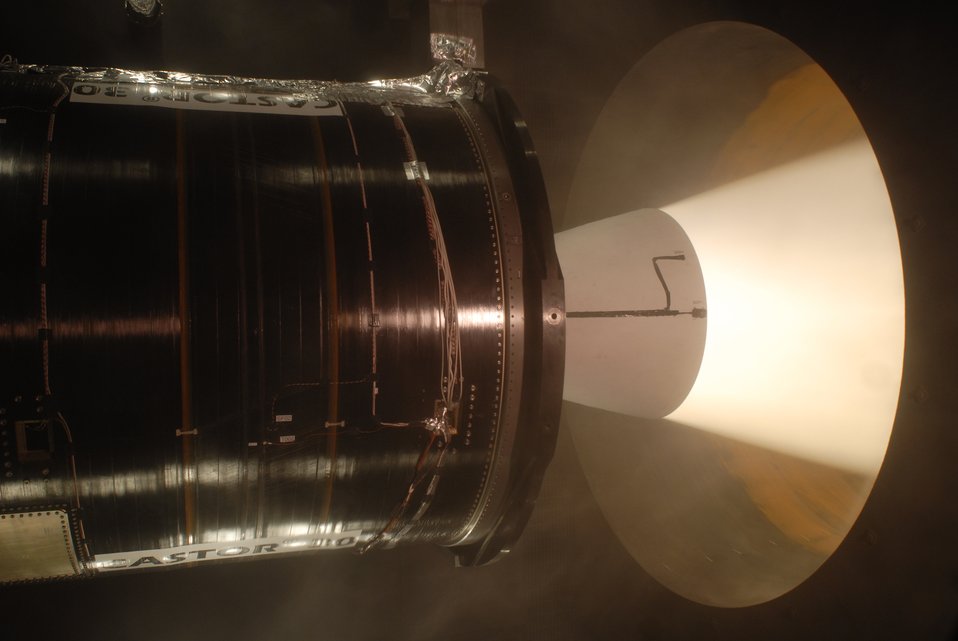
Castor 30 engine test

A Castor 30 rocket motor was ground-tested Dec. 9, 2009, at the Arnold Engineering Development Center at Arnold Air Force Base, Tenn., in a specialized vacuum chamber that simulates the altitude at which the upper-stage motor will operate. This was the longest rocket-motor test ever in AEDC's J-6 Large Rocket Motor Test Facility, which became operational in 1994.